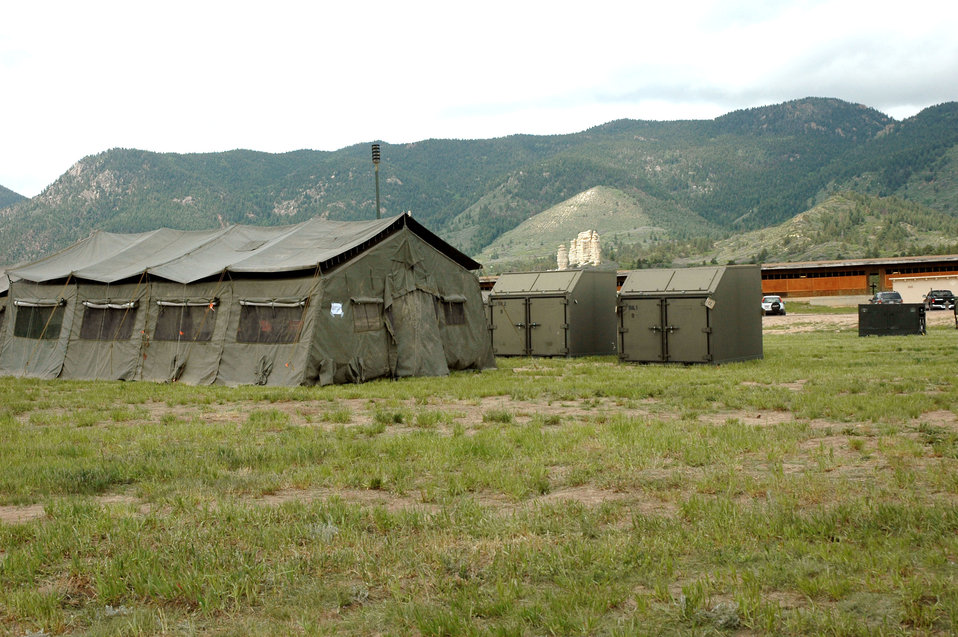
Cadets learn it's a BEAR out there

U.S. AIR FORCE ACADEMY, Colo. -- Cadets learned to set up basic expeditionary airfield resources in a bare base environment here recently during Global Engagement 2005. This was the first of six groups of cadets to go through the training throughout the summer.